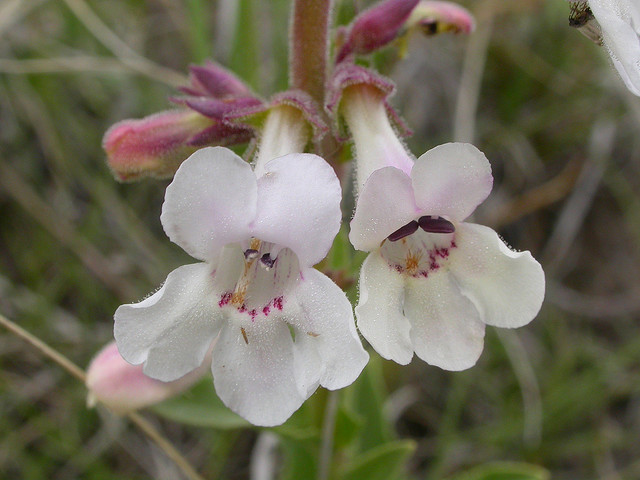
white beardtongue

Charles M. Russell National Wildlife Refuge